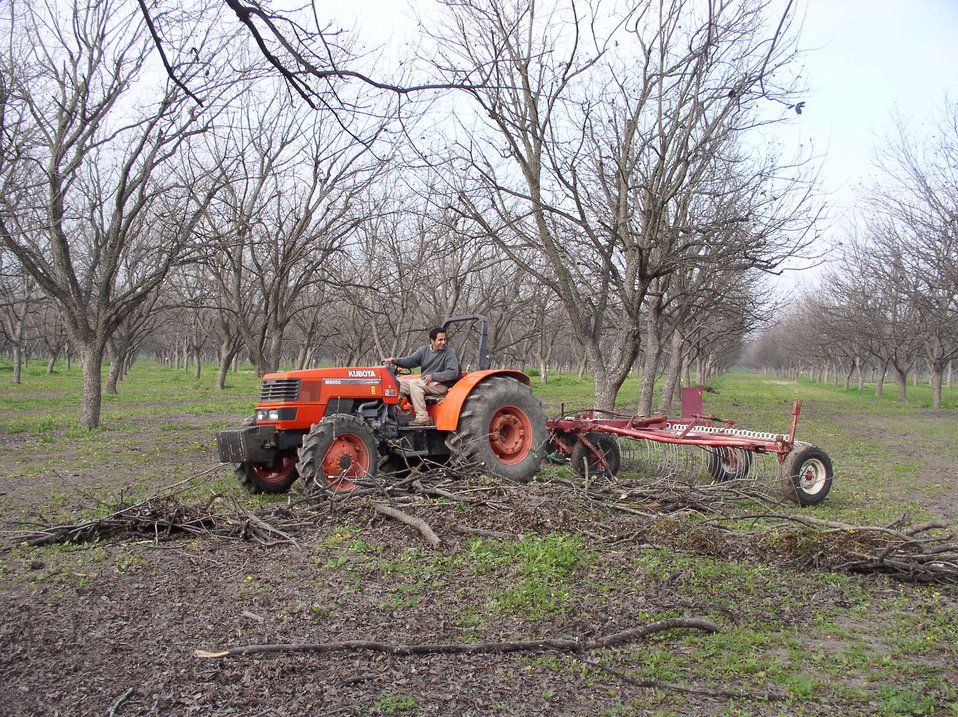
Arrowhead Farms owner Mr. Akram Mohammad, rakes fallen twigs and branches that came from his self-pruning pecan trees in Zavala County, TX, on Jan. 10, 2010, has been owned by a pecan farmer since 2005. An additional reason for clearing the debris is so that contractors have a level clear ground to install an underground micro irrigation system that feeds water to the roots of 4,380 pecan trees on 146 acres. Mr. Mohammad said, “USDA (U.S. Department of Agriculture) was essential to my business and trees surviving the recent exceptional drought. The trees were stress free thanks to underground micro-irrigation. This is essential to the future growth of Texas agriculture and good for America.” U.S. Department of Agriculture’s (USDA) Environmental Quality Initiative Program (EQIP) awarded Mr. Mohammad a $130,000 grant in 2008. He provided $26,000 for the balance of the $156,000 total cost to install a 146-acre underground micro-irrigation for 4,380 trees.